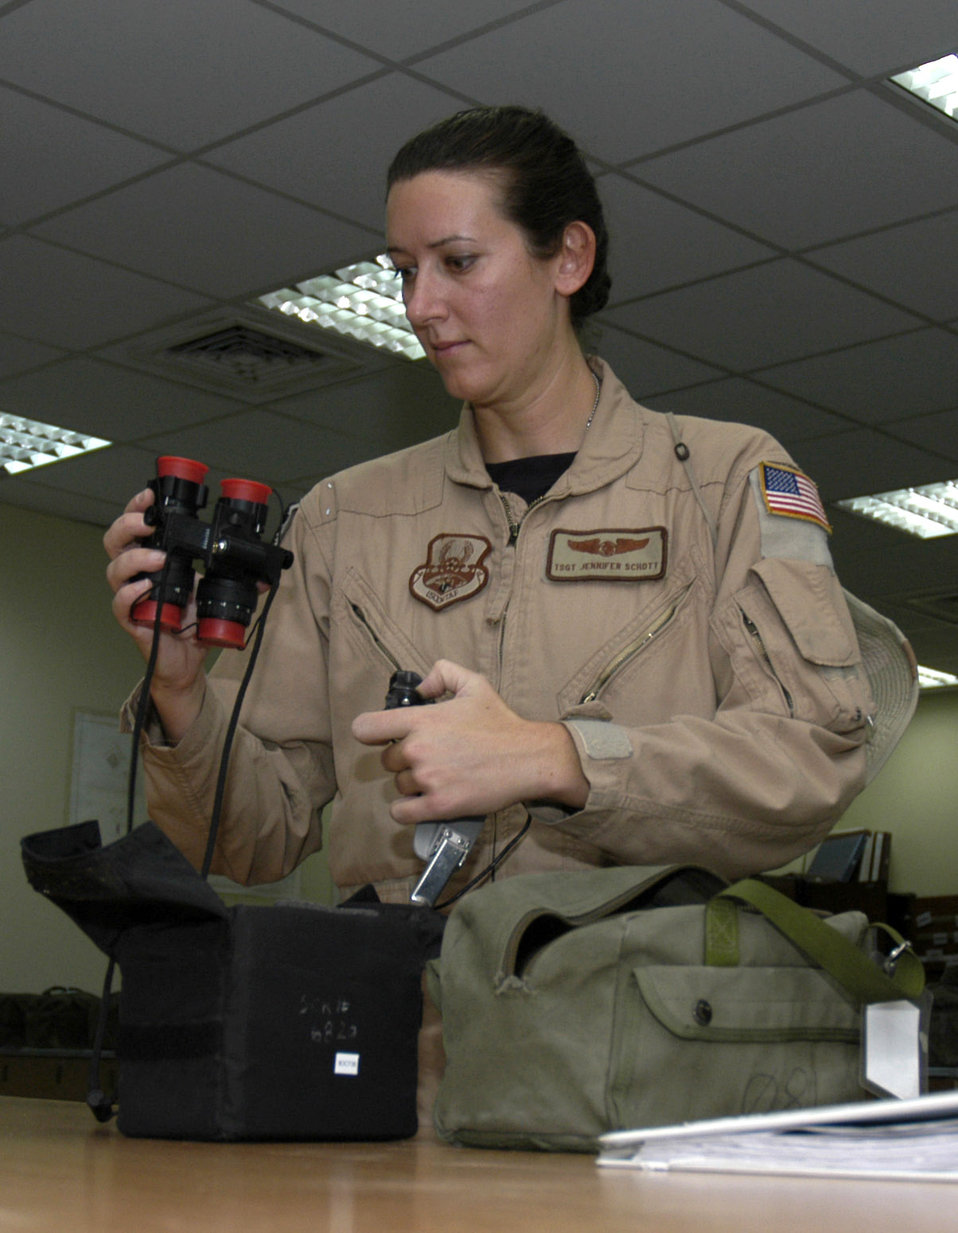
Airlift support

Tech. Sgt. Jennifer Schott checks her night-vision goggles at a forward operating base in Southwest Asia Aug. 23. Sergeant Schott is a loadmaster with the 738th Expeditionary Airlift Squadron, which is part of the 386th Air Expeditionary Wing. The wing is the primary aerial hub for Operation Iraqi Freedom and provides airlift support for Operation Enduring Freedom and the Horn of Africa.